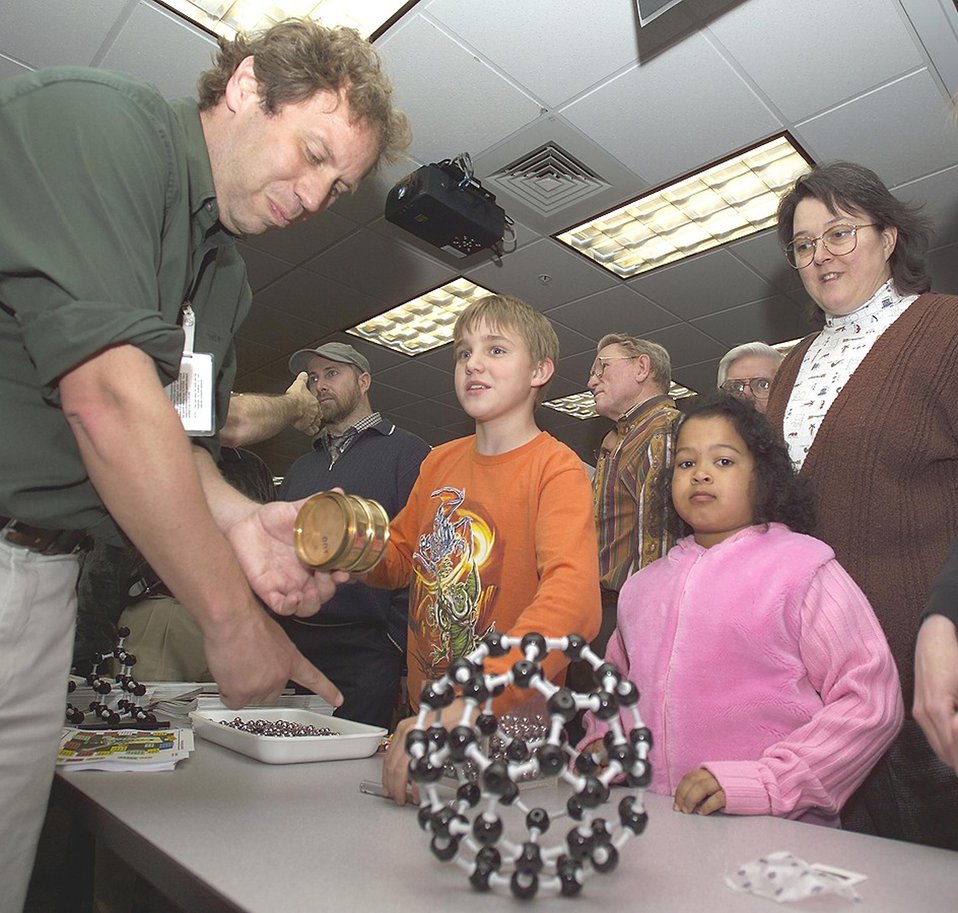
OPEN HOUSE AT THE SPALLATION NEUTRON SOURCE AT DOE'S OAK RIDGE NATIONAL LABORATORY.

OAK RIDGE SPALLATION NEUTRON SOURCE SCIENTIST, JOHN ANKER DEMONSTRATING AN EXAMPLE OF THE SNS INSTRUMENTATION. VISITORS WERE PROVIDED WITH INFORMATION ON THE FACILITY'S CONSTRUCTION, ENVIRONMENT, SAFETY AND HEALTH PERFORMANCE, ACCELERATOR SYSTEMS, AS WELL AS SCIENCE AND INSTRUMENTATION.